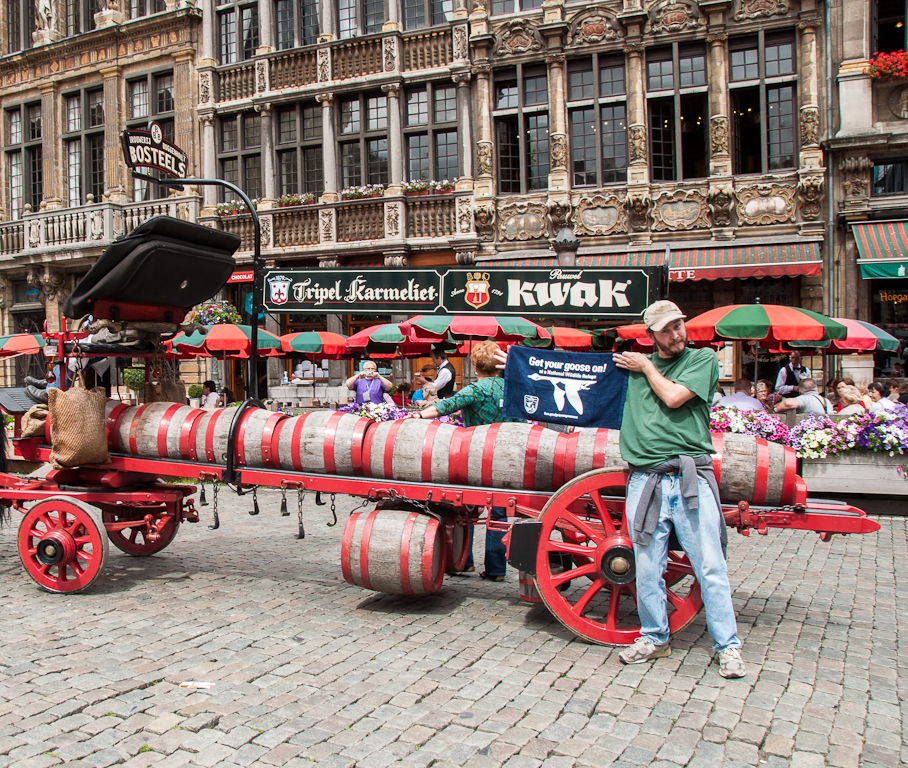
GYGO! Goes International!

A USFWS employee took some fun GYGO! photos while on vacation with family in Europe. Here's one from Brussels!